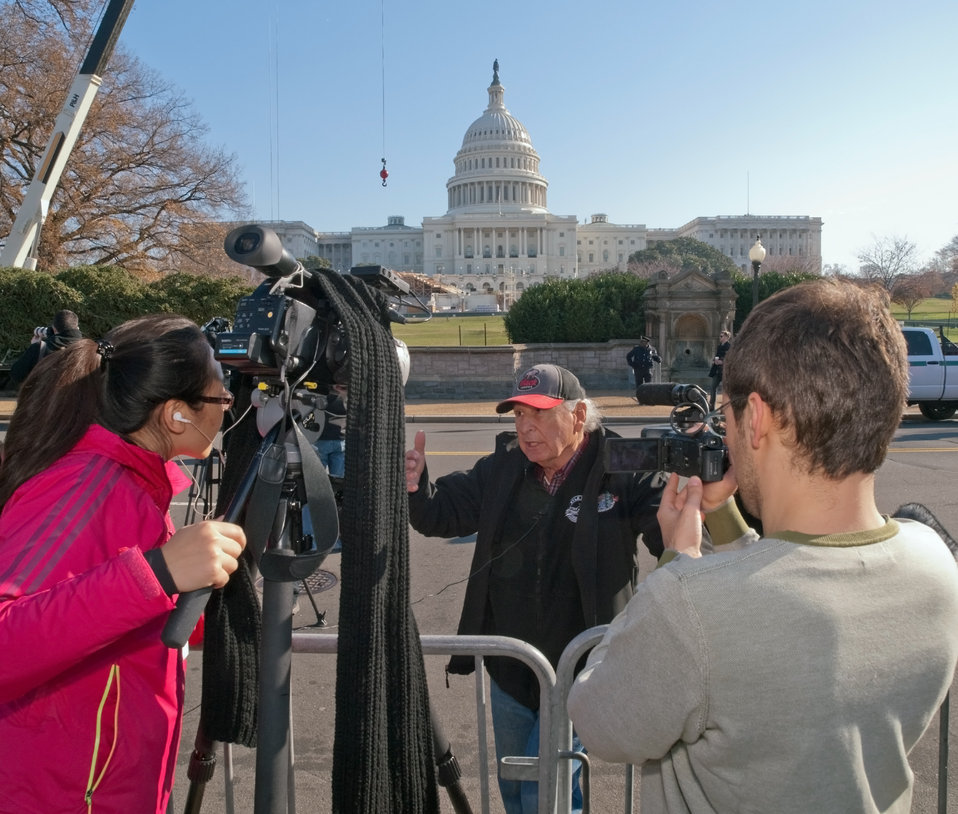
Former Colorado Senator Ben Nighthorse Campbell is interviewed after driving the 2012 Capitol Christmas Tree to Washington, D.C. on Nov.26, 2012. The 73-foot Englemann spruce traveled from the White River National Forest in Colorado.